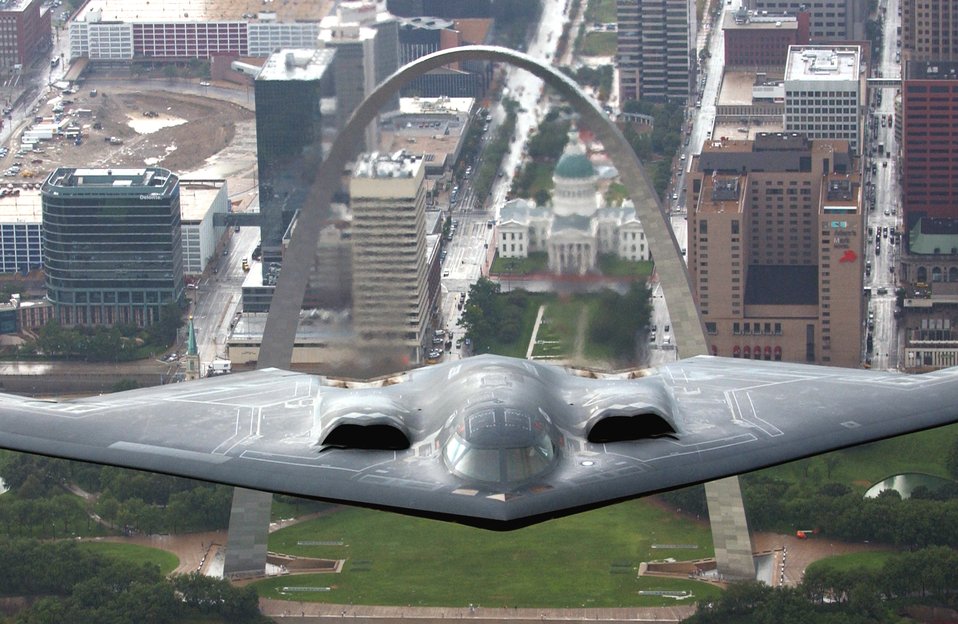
B-2 Spirit flies over St. Louis

A B-2 Spirit flies over the St. Louis Arch on Aug. 10 during Air Force Week. The aircraft is with the 509th Bomb Wing at Whiteman Air Force Base, Mo.